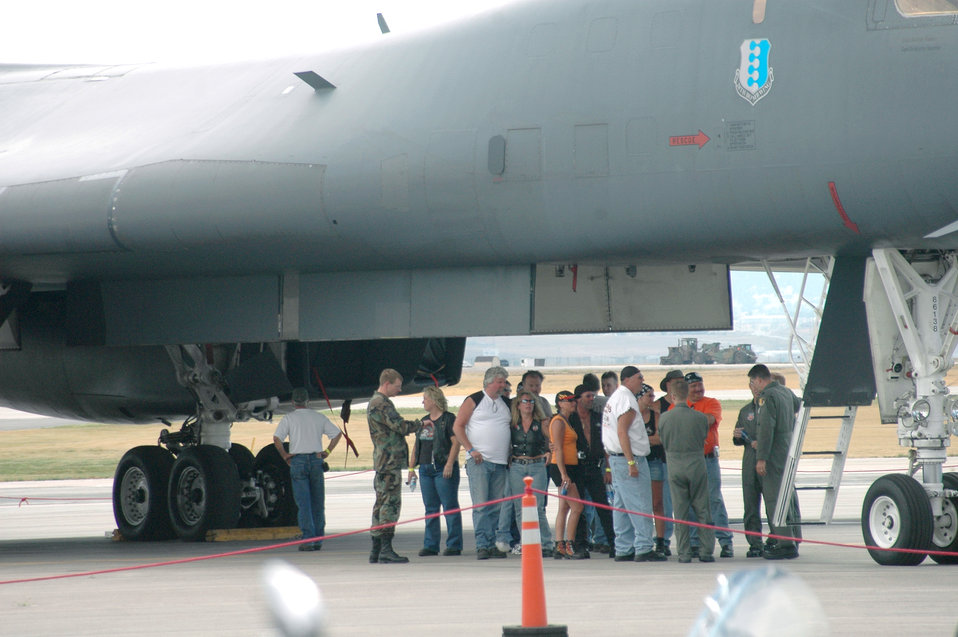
Thunder rolls

Members of the Ellsworth Dakota Thunder Motorcycle Club speak with aircrew members of a B-1 Lancer at Ellsworth Air Force Base, S.D., on Aug. 8. Members of the local motorcycle club also had a chance to park their motorcycles in front of the aircraft for photo opportunities. Following the tour, nearly 200 riders from Ellsworth and the surrounding communities began their annual ride to the 66th Annual Sturgis Motorcycle Rally, which lasts through Aug. 13 at nearby Sturgis.